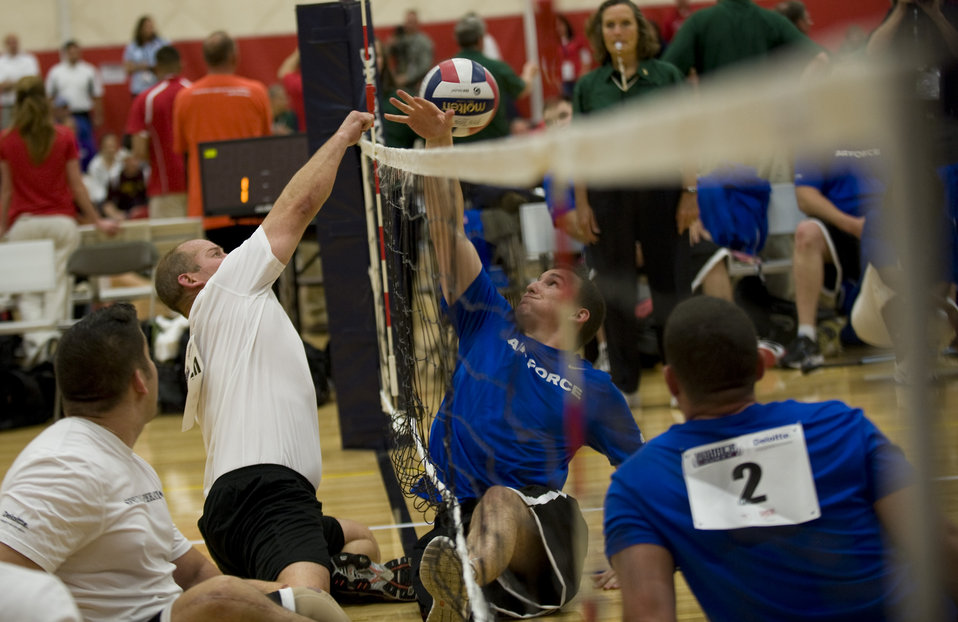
SOCOM defeats Air Force

A member from the United States Special Operations Command teams knocks the ball past an Air Force defender during sitting volleyball competition at the 2011 Warrior Games in Colorado Springs, Colo. The Air Force played the U.S. Special Operations Command team, losing the series 2 games to 1.